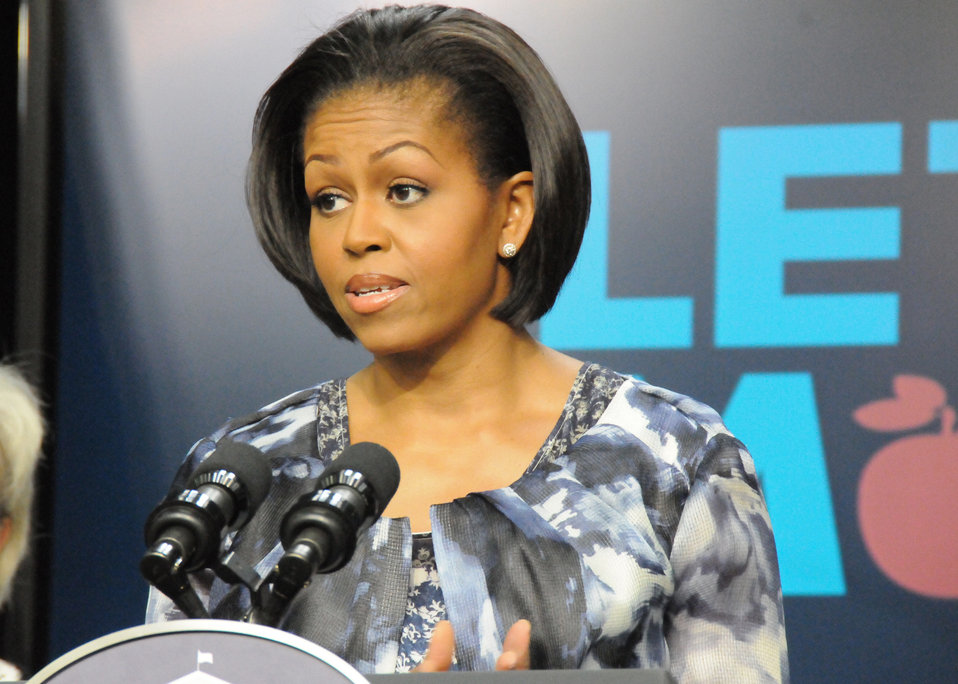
First Lady Michelle Obama presents the Childhood Obesity Task Force action plan, “Solving the Problem of Childhood Obesity Within a Generation,' during a press conference at the Eisenhower Executive Office Building in Washington, D. C., on Tuesday, May 6, 2010. USDA photo 10di1354- 93